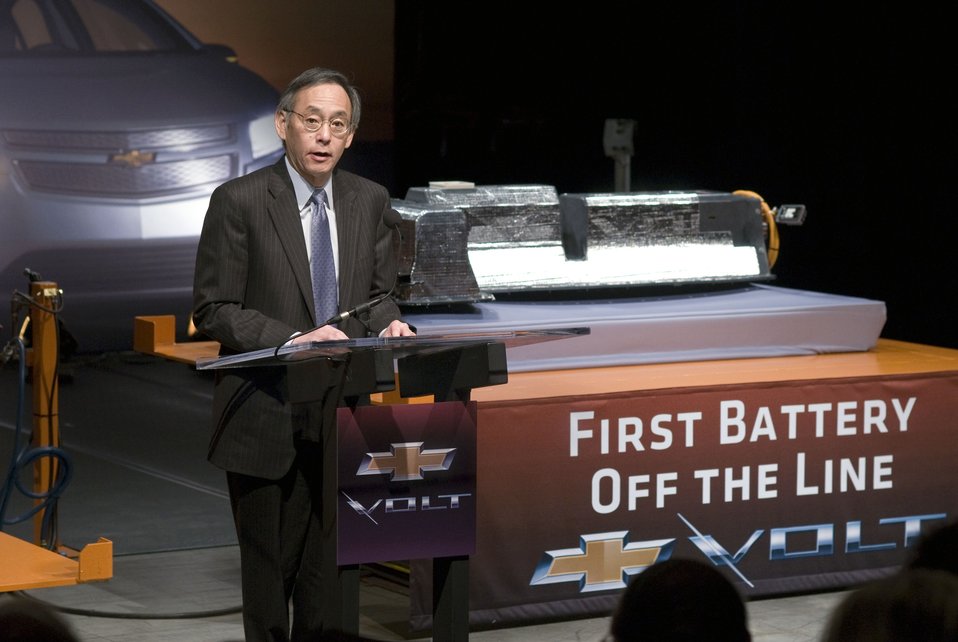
ChevyVoltFirstBattery03

U.S. Energy Secretary Steven Chu addresses the gathering after the first Chevrolet Volt battery came off the assembly line at the GM Brownstown Battery plant in Brownstown Township, Michigan Thursday, January 7, 2010. The facility is the first lithium ion battery pack manufacturing plant in the U.S. operated by a major automaker.